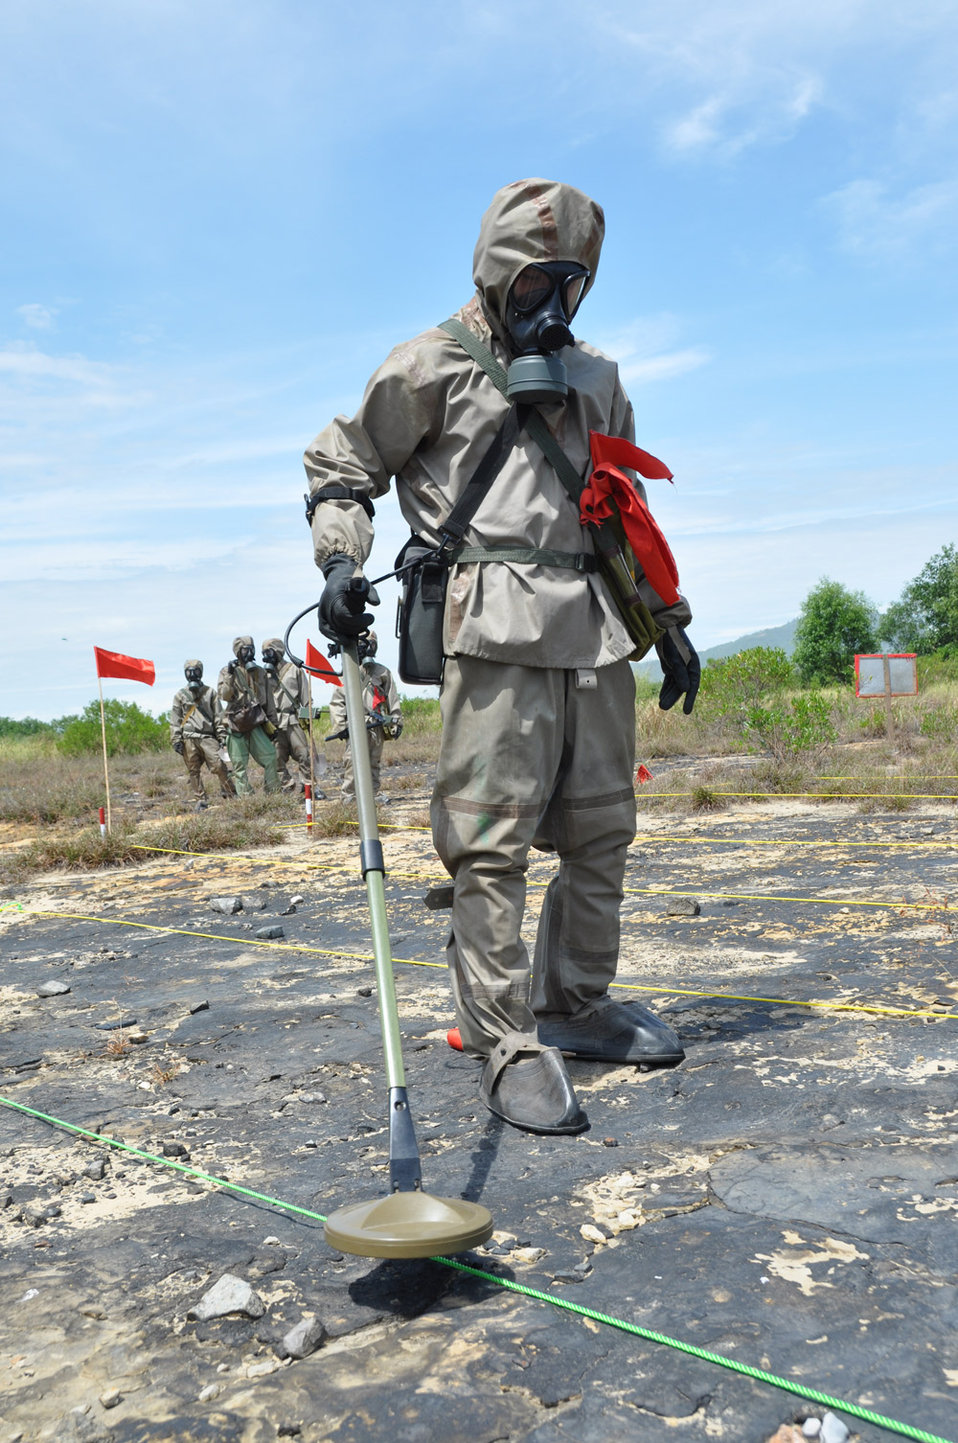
A Vietnamese soldier demonstrates UXO detection and clearance in Danang. June 17, 2011